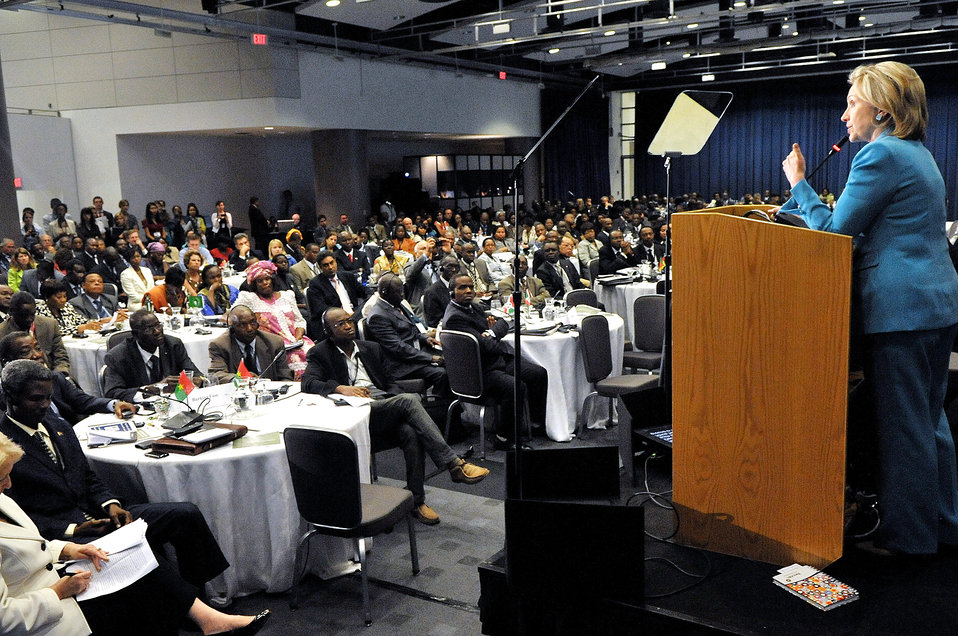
Secretary Clinton Delivers Remarks at the AGOA Forum

U.S. Secretary of State Hillary Rodham Clinton delivers remarks at the African Growth and Opportunity Act (AGOA) Forum at the Ronald Reagan Building in Washington, D.C., on August 3, 2010.